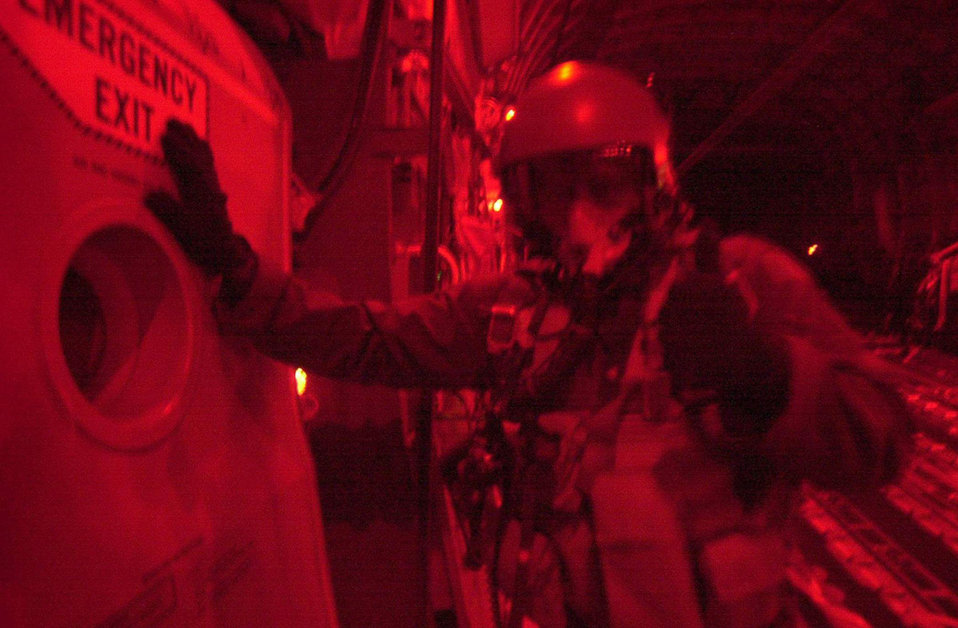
Ready to Drop'em

OPERATION ENDURING FREEDOM -- U.S. Air Force crew members from Charleston Air Force Base, S.C., continue high altitude drops of HDRs (Humanitarian Daily Rations) from their C-17 Globemaster III somewhere over northern Afghanistan, Oct. 18, 2001. The C-17 dropped 42 TRIADS containing 17,220 HDRs. More than 500,000 HDRs have been dropped into Afghanistan since the humanitarian relief effort began.